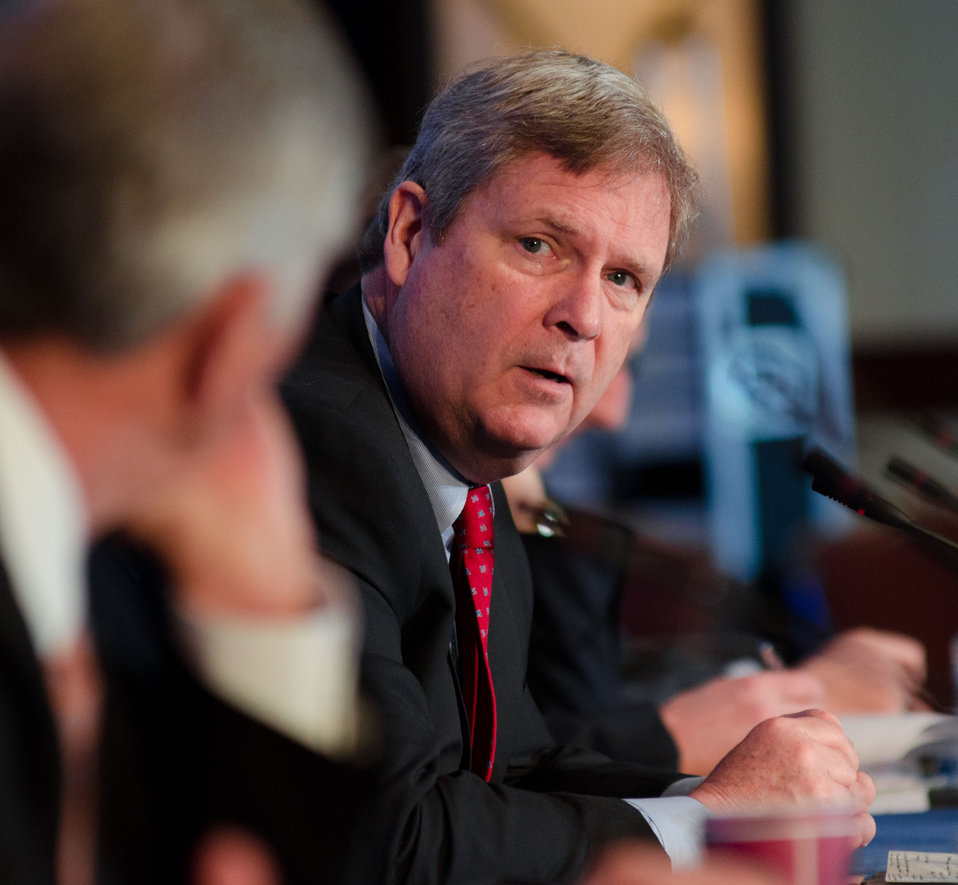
Agriculture Secretary Tom Vilsack (center) addresses Arkansas - Governor Mike Beebe (left) during the National Governors Association Education, Early Childhood and Workforce Committee meeting in Washington, D.C., on Sunday, February 26, 2012.